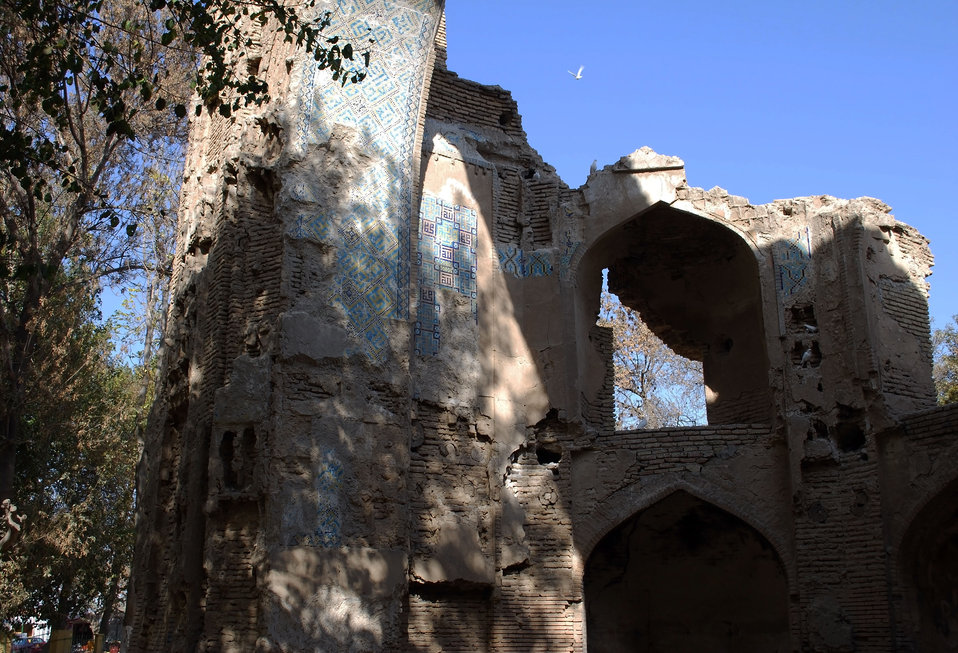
'On the Road' in Balkh Province